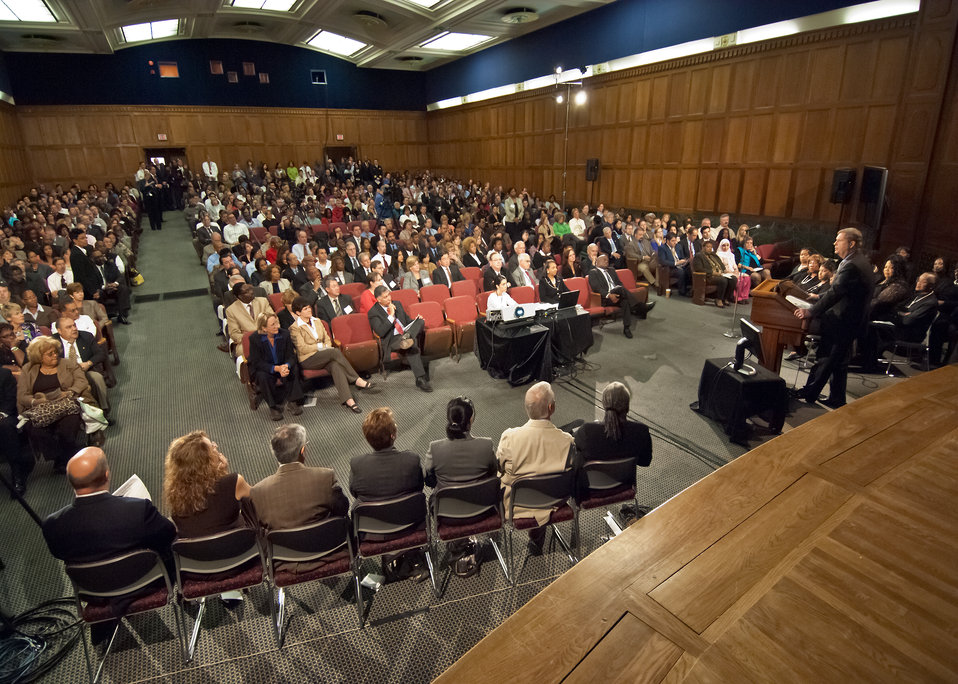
Agriculture Secretary Tom Vilsack addresses U.S. Department of Agriculture employees during the Cultural Transformation Recognition Ceremony at the Jefferson Auditorium, US Department of Agriculture in Washington, DC, on Tuesday, October 4, 2011. Cultural Transformation is the process of creating a workplace where all employees and customers are treated with dignity, respect and the opportunity for success. Recognizing the important contributions of all employees to the operation of the United States Department of Agriculture. The goal of cultural transformation is to get everyone at USDA – from the Under Secretaries to employees at every grade level, in every location - to ensure USDA is a place where there’s opportunity for all to reach their full potential. Only then can USDA provide its customers with exceptional service in an equitable manner.